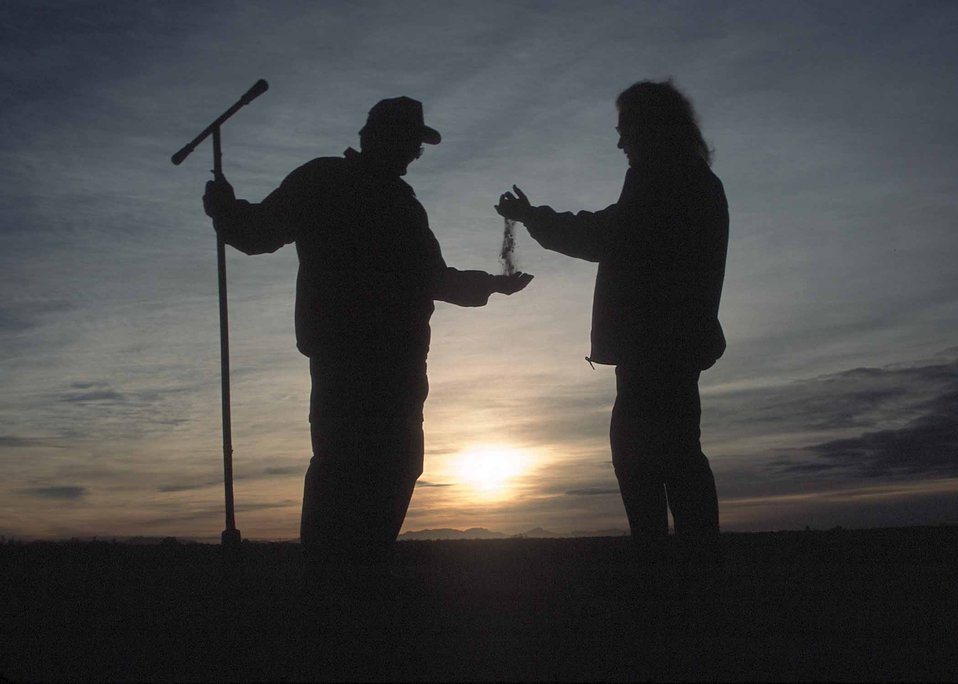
District Conservationist Bobbi McDerMott and technician Neal Hoy taking soil samples and checking soil moisture. Yuma, Az.